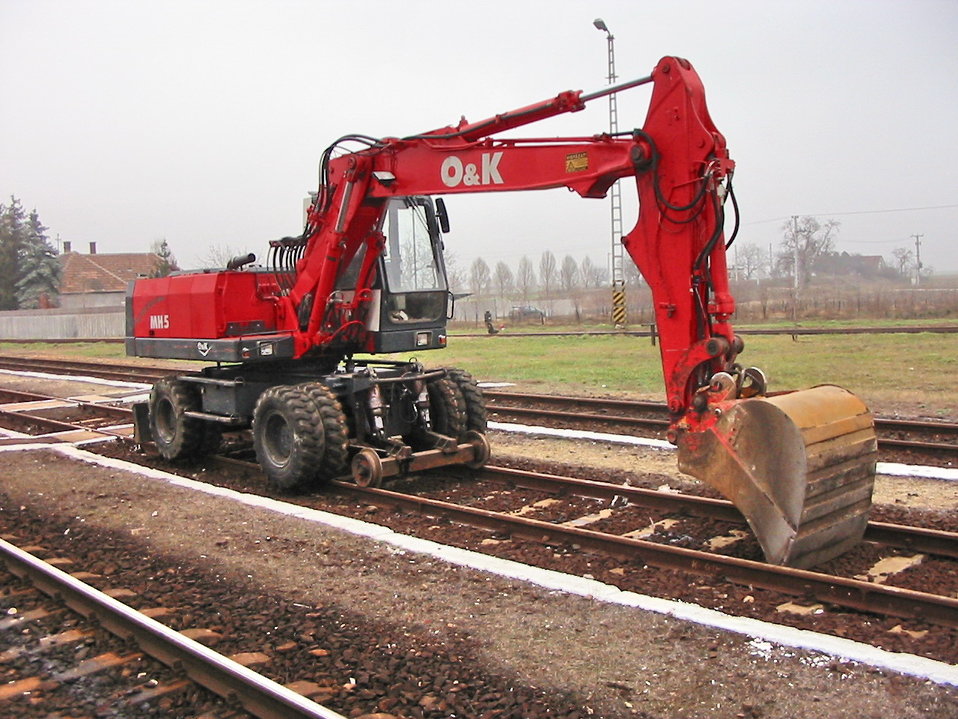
Road-rail excavator at Dabas railway station, Hungary Magyar: Vágányonjáró forgókotró Dabas vasútállomásán